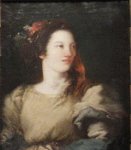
'Portrait of young lady with a red bow in the head' by Giovanni Domenico Tiepolo